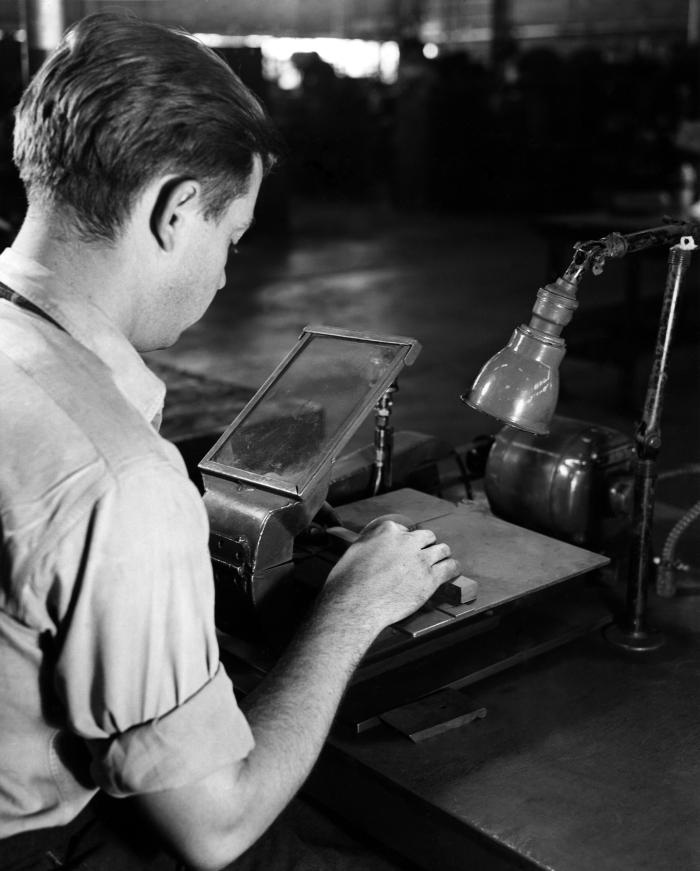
This historical photograph was provided by the Center for Disease Control's (CDC), National Institute for Occupational Safety and Health (NIOSH). Taken inside a metal machine shop, the image depicted a man properly using a protective device while performing cutting operations. However, he was not wearing goggles, even though the eye shield was present.